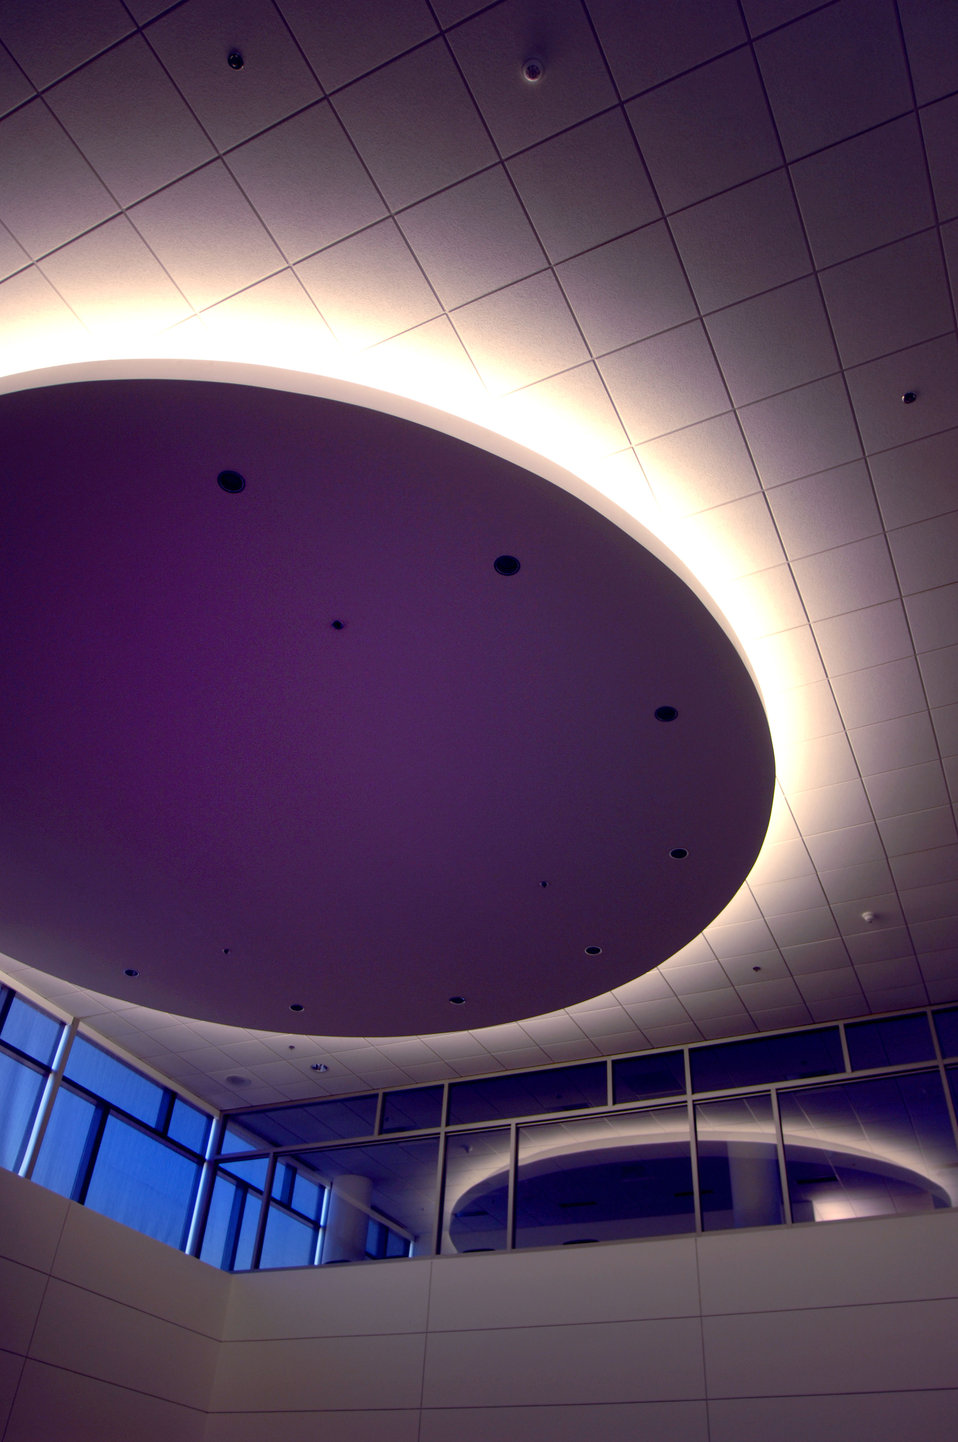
Interior of Spallation Neutron Source

06-086-140 DOE photo by Lynn Freeny

Oak Ridge National Lab Oak Ridge Tennessee March 2006